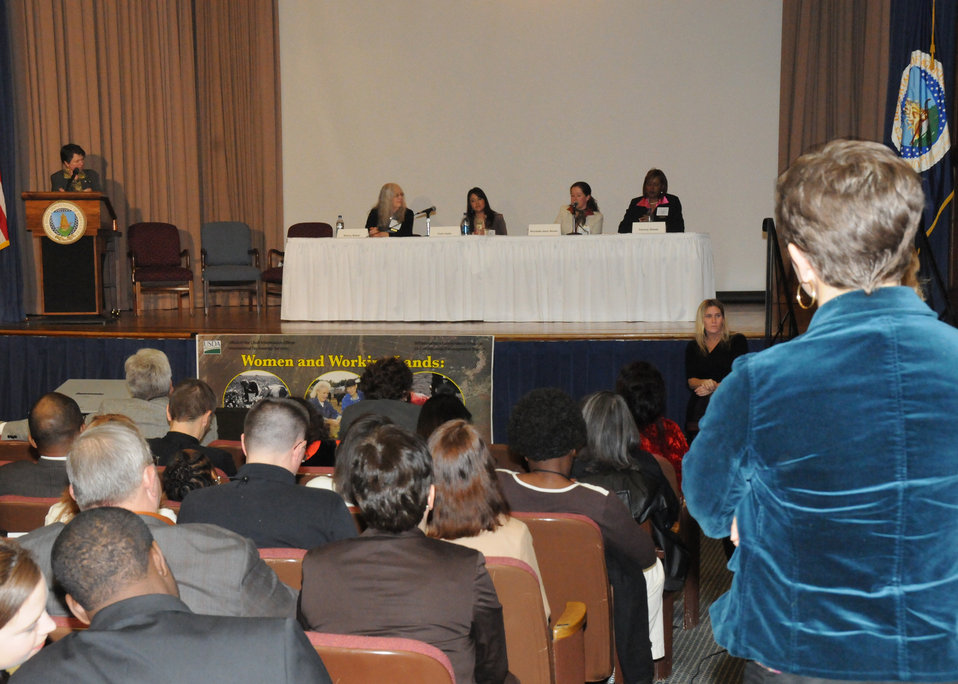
The panelists take questions from the audience at the Women and Working Lands: Past, Present, Future conference was held in the Jefferson Auditorium at the Department of Agriculture in Washington, D. C., on Thursday, Mar. 25, 2010. USDA photo 10di1283-174